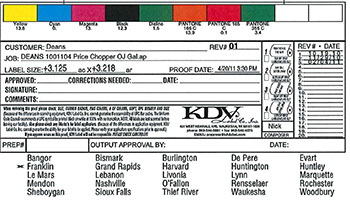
RECALLED – Orange Juice

March 3, 2014 – Product Recall – Lehigh Valley Dairy Conducts Voluntary Recall of Lehigh Valley, Swiss Premium, and Price Chopper Brand Orange Juice Because It May Contain Undeclared Allergen (Milk).